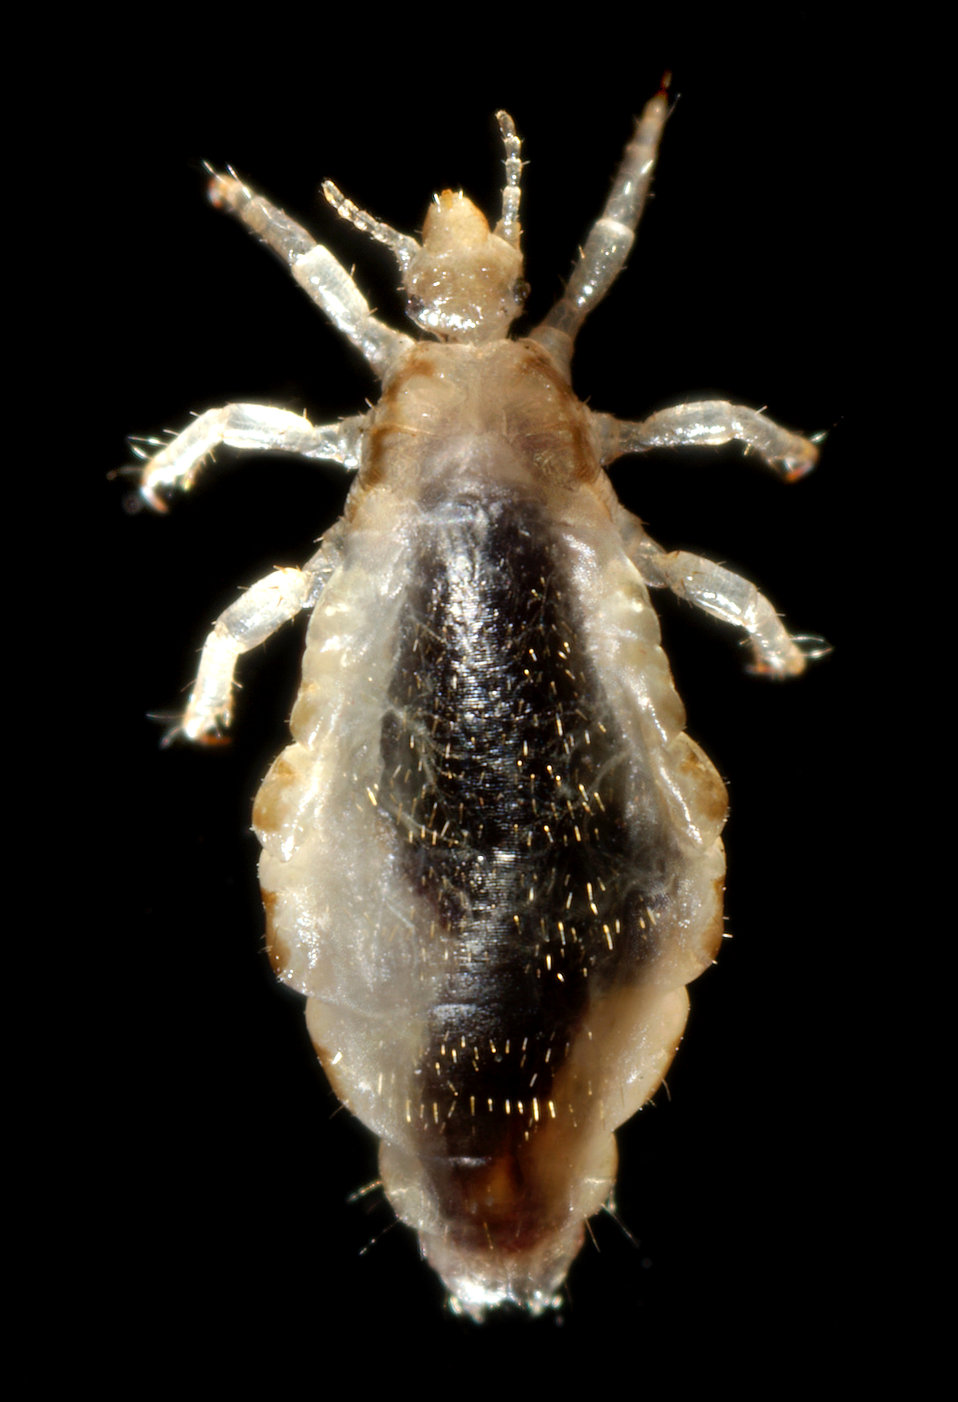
This 2006 photograph depicted a dorsal view of a female body louse, Pediculus humanus var. corporis. Some of the external morphologic features displayed by members of the genus Pediculus include an elongated abdominal region without any processes, and three pairs of legs, which are all equal in length and width.Body lice are parasitic insects that live on the body, and in the clothing or bedding of infested humans. Infestation is common, found worldwide, and affects people of all races. Body lice infestations spread rapidly under crowded conditions where hygiene is poor, and there is frequent contact among people. The sensorial setae, or hairs that cover the louse's body, pick up, and transmit information to the insect about changes in its environment such as temperature, and chemical queues. Note the dark mass inside the abdomen, which represents a previously ingested blood meal.